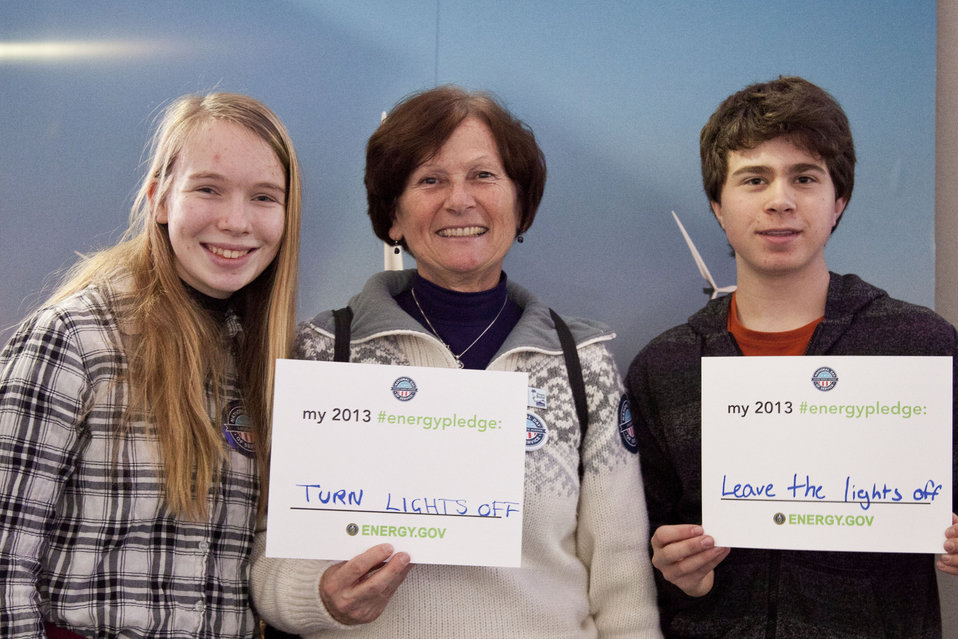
What's your #energypledge?